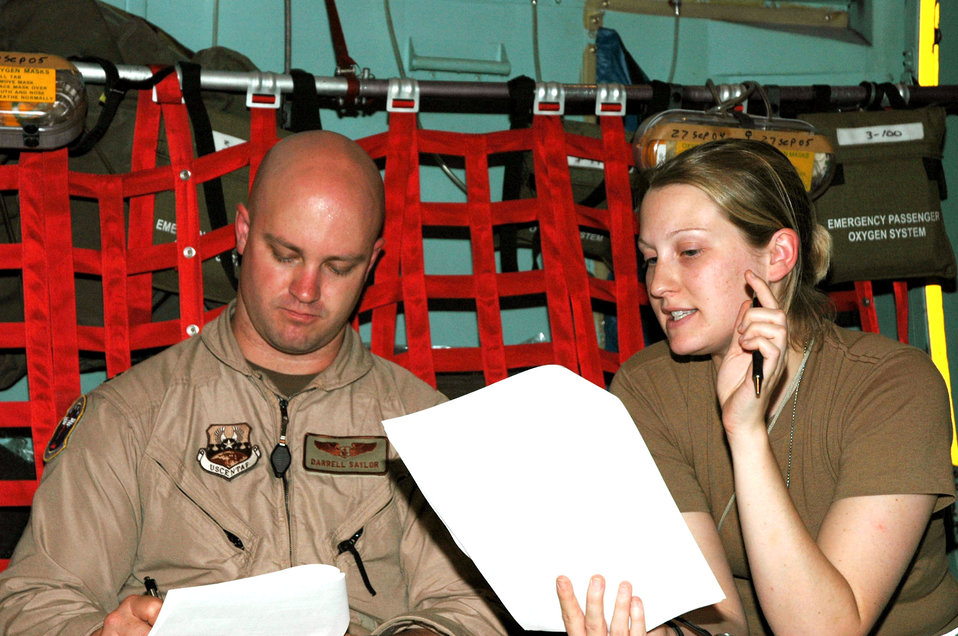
Staging facility takes over where hospital leaves off

BALAD AIR BASE, Iraq -- Second Lt. Shandry Goshert briefs Capt. Darrell Saylor on the patients who will be medevaced to Germany. She relays all pertinent medical information regarding the patients' conditions including treatment received, medication administered and special needs. Lieutenant Goshert is a nurse with the 332nd Expeditionary Medical Group's contingency aeromedical staging facility and is deployed from Keesler Air Force Base, Miss.